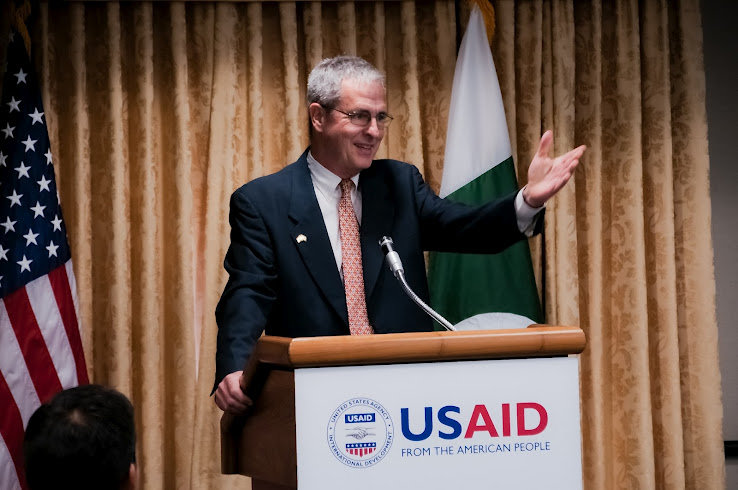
Jonathan Conly

WASHINGTON, D.C. – This week, Jonathan Conly was sworn in as the new U.S. Agency for International Development (USAID) Country Director for Pakistan. USAID Administrator Dr. Rajiv Shah presided over the ceremony and administered the oath in the presence of Mr. Conly’s family, friends, and colleagues, as well as members of the Pakistani-American community and the Pakistan Embassy’s Deputy Chief of Mission, Dr. Asad Majeed Khan.